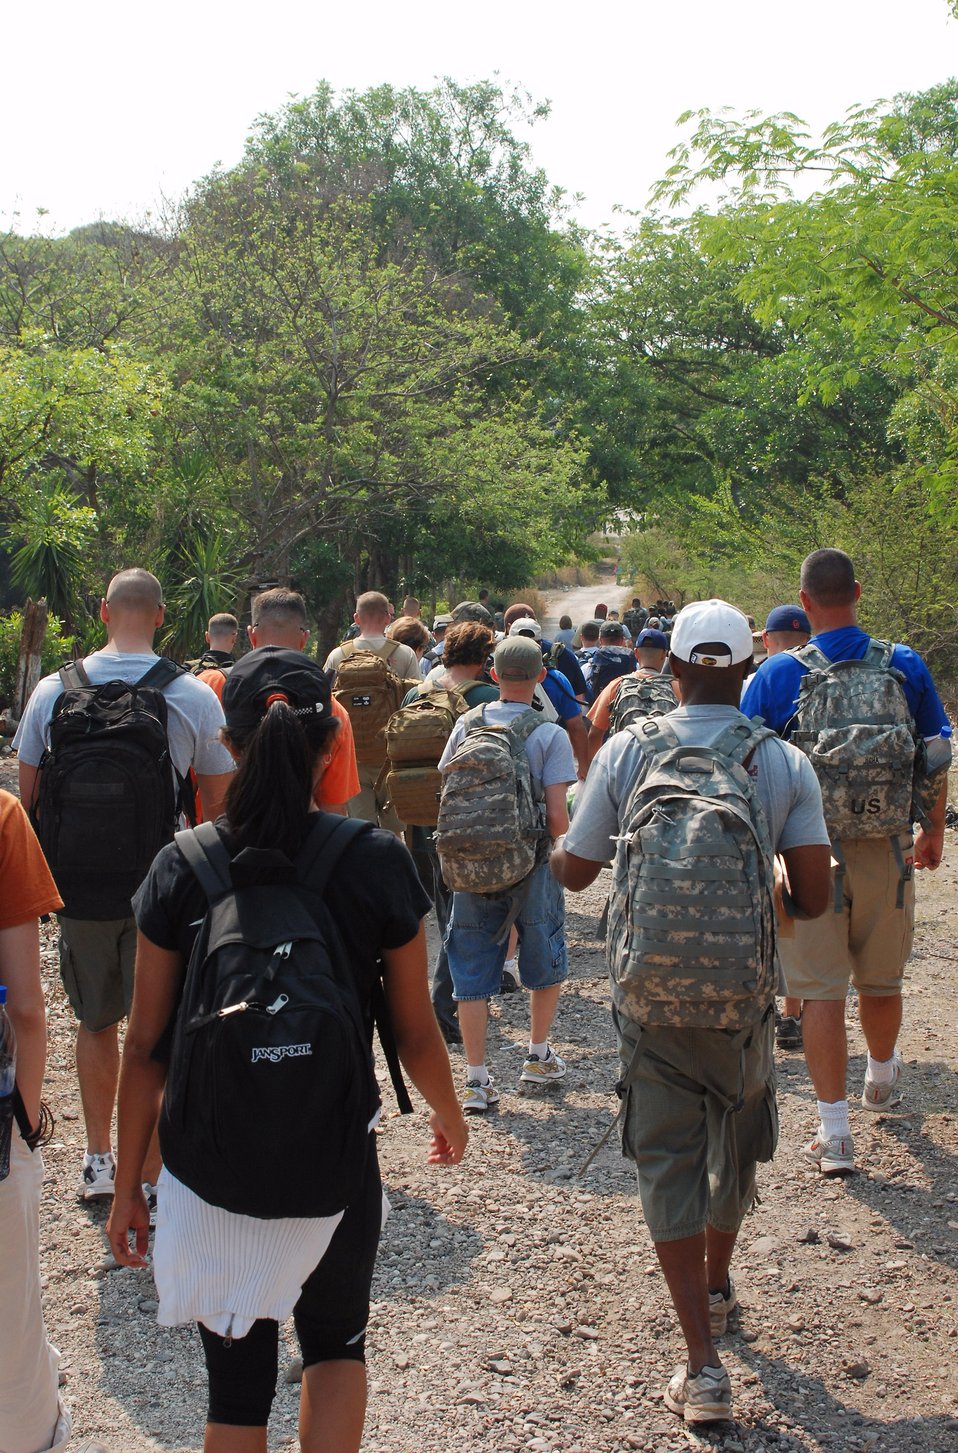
JTF-Bravo volunteers give needed food to local Hondurans

Joint Task Force-Bravo personnel begin their hike to deliver two and one half tons of staple foods to two villages near Humuya, Honduras, April 26. The three-mile hike was part of JTF-Bravo's ongoing chapel hike program.